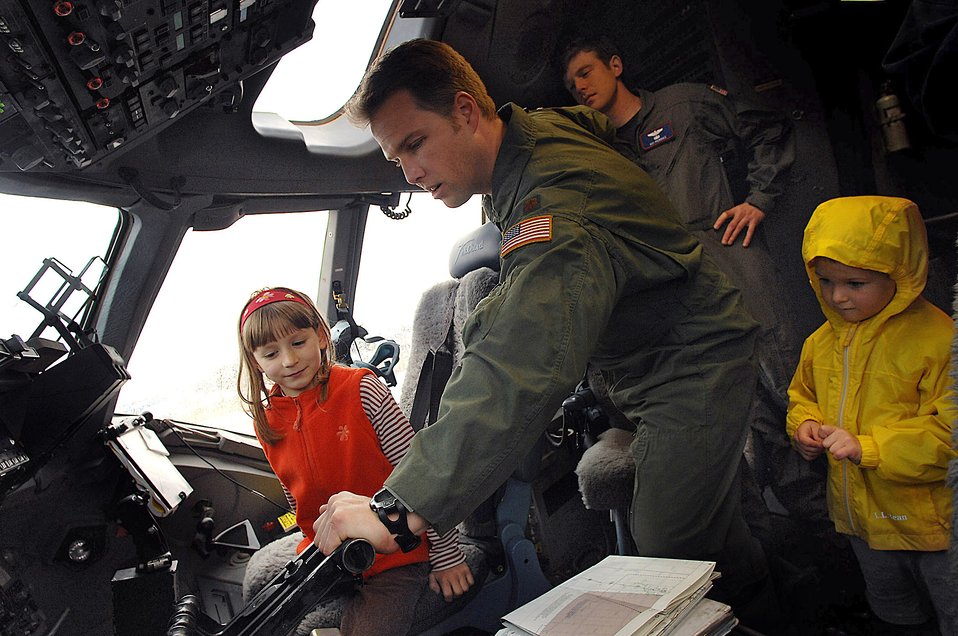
Future Kiwi pilots learn the ropes

Maj. Chuck Corrigan explains controls of a C-17 Globemaster III to children April 17 in Christchurch, New Zealand. Airmen from the 446th Airlift Wing and 62nd Airlift Wing at McChord Air Force Base, Wash., have flown missions from Christchurch for Operation Deep Freeze for the past six months.